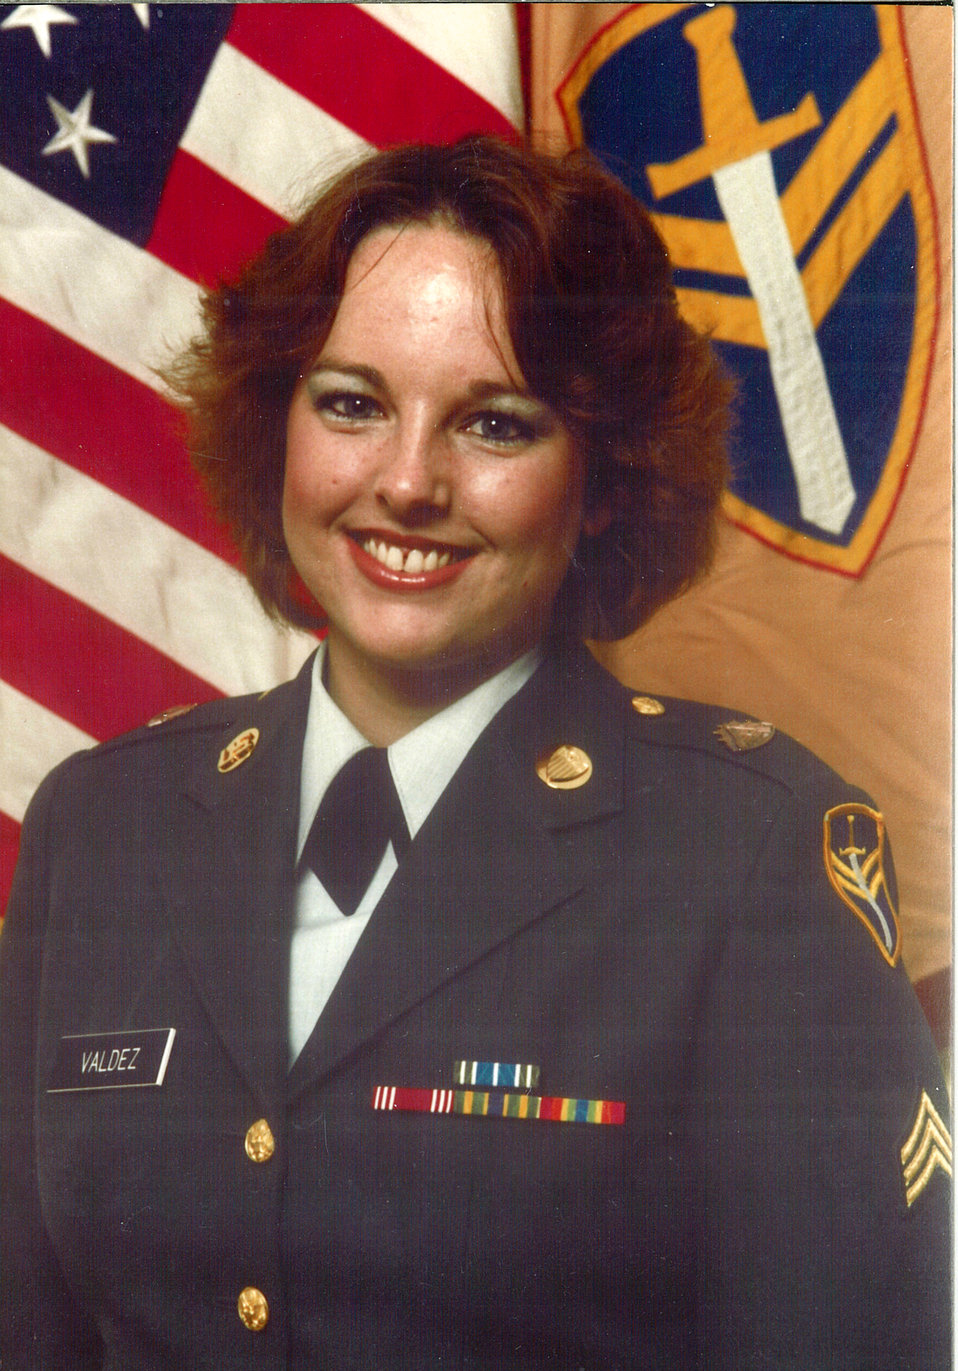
Eileen Harke, CRM, served on active duty in the Army from 1982 to 1988 as a Military Personnel Specialist and later as a Personnel Staff Supervisor. She was stationed at Fort Leonard Wood, Missouri, and Stuttgart, Germany. She currently is a Records Manager and FOIA Coordinator at the Washington Fish and Wildlife Office in Region 1 and says she “is very proud to now work for the USFWS!”